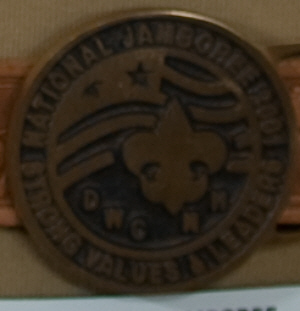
Photograph of 2001 Max I. Silber buckle